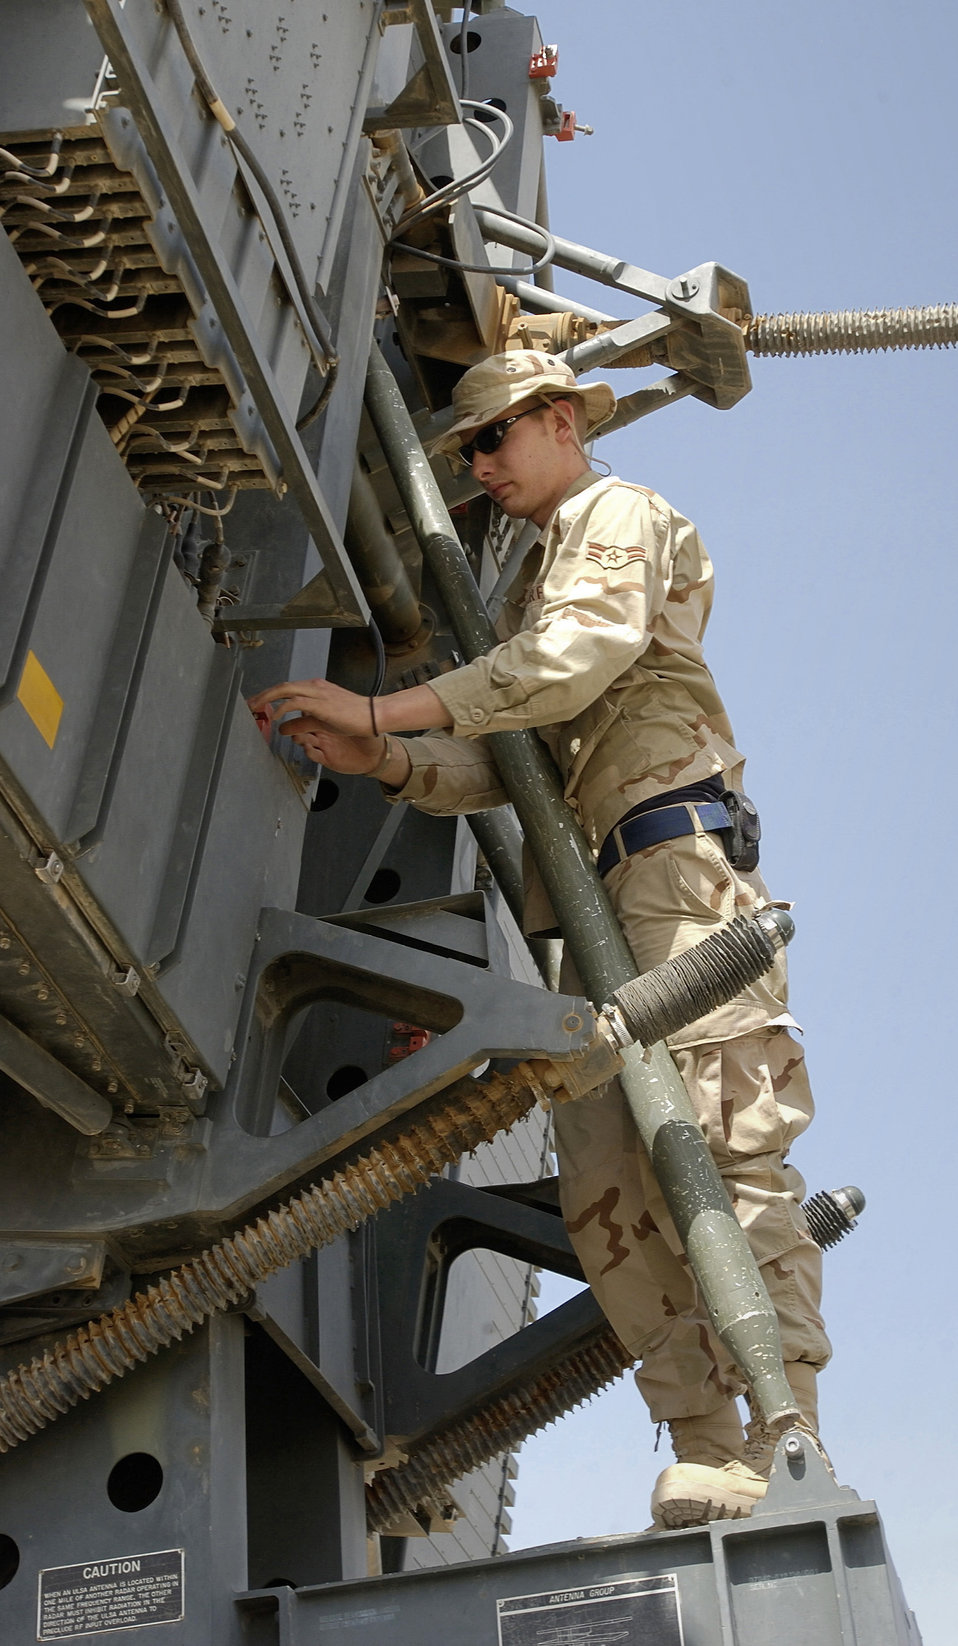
Controlling the sky

KIRKUK AIR BASE, Iraq -- Airman 1st Class Derek Riley checks over a radar antenna. He is assigned to the 727th Expeditionary Air Control Squadron Detachment 1 here. The detachment's Airmen provide commanders and pilots a real-time view of northern Iraq's airspace.